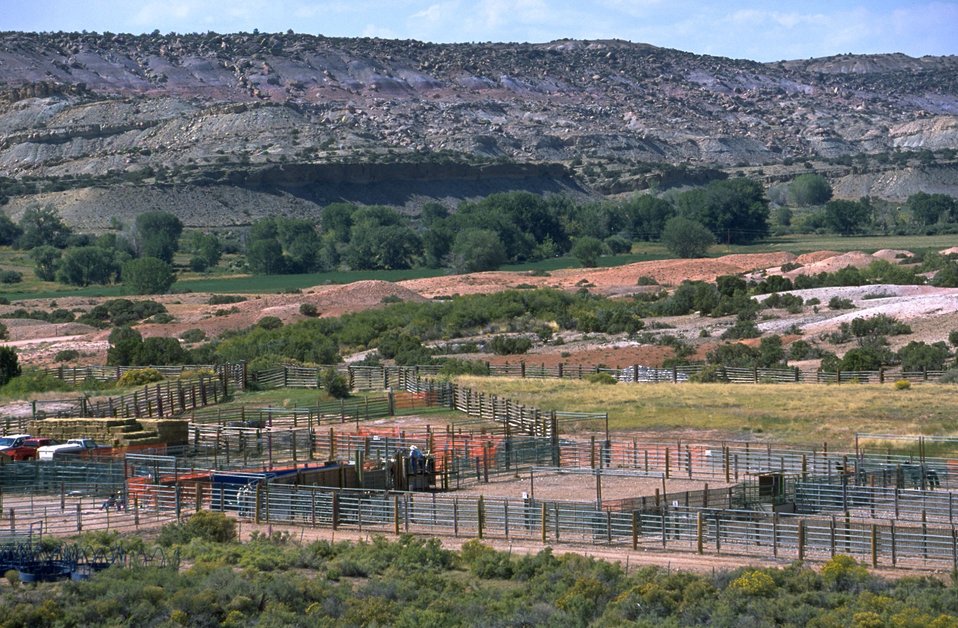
Wild Horse Holding Area at Britton Spring in the Pryor Mountain National Wild Horse Range